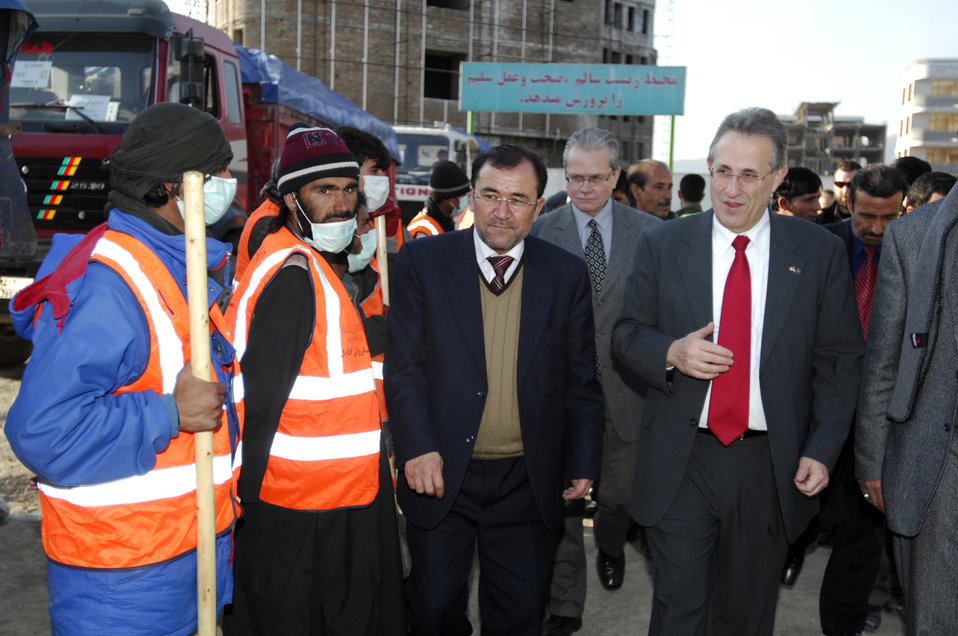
Care42